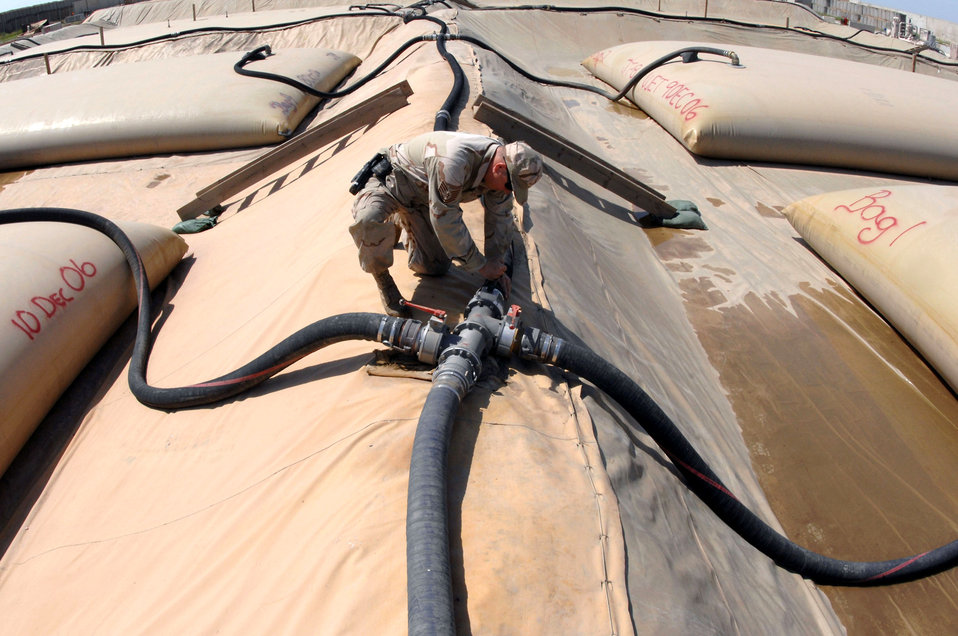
A farm of a different kind

Tech. Sgt. Adam Giles closes a block valve to a 50,000 gallon aviation fuel bladder at Kirkuk Air Base, Iraq. This bladder farm provides enough fuel for five surrounding forward operating bases as well as Army and Air Force operations at Kirkuk.